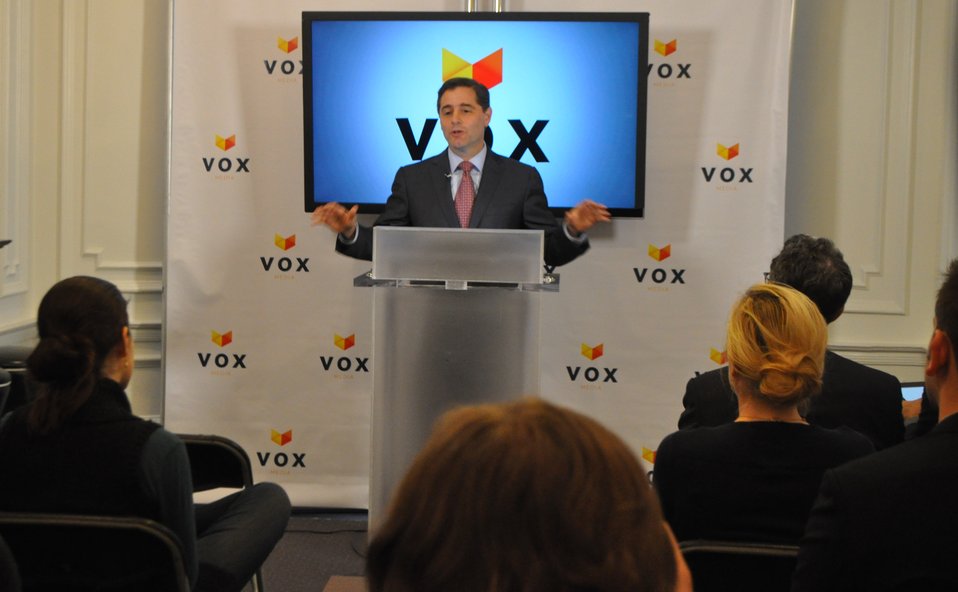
Broadband Challenges and Opportunities, at Vox Media - DSC 0699